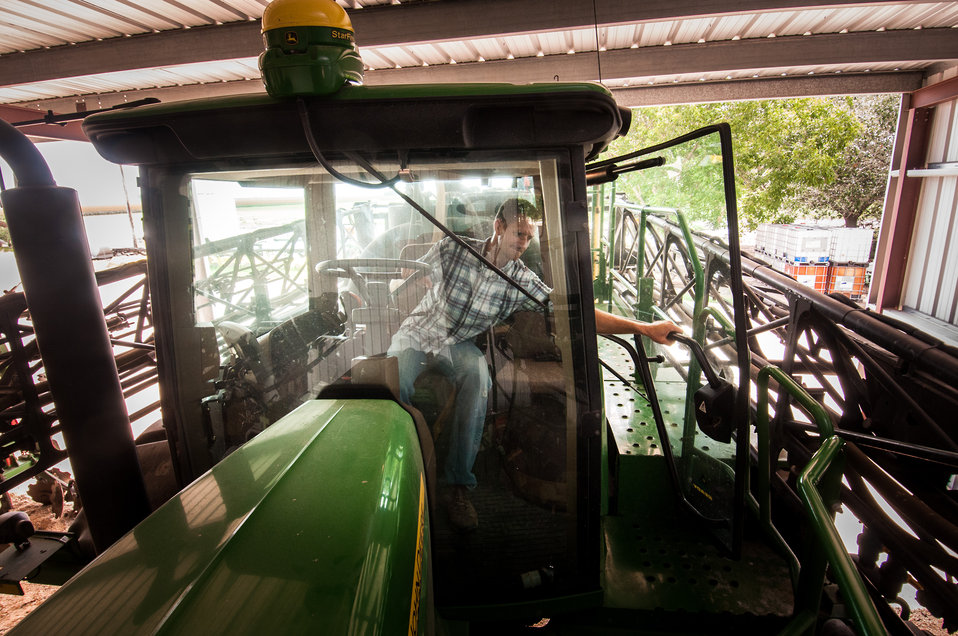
Michael Popp (pronounced Pope) performs mechanical checks on farm equipment used for tilling, planting, spraying and harvesting crops at Popp Farms 05 in El Campo, TX on Jun. 20, 2013. The Popp family spans five generations and grows cotton and milo (grain sorghum) on 2,400 acres of farmland. Michael chose farming after graduating from Texas A and M with a degree in Agriculture Economics and a Masters degree in Finance. The farm is a member of the United Agricultural Cooperative, Incorporated.